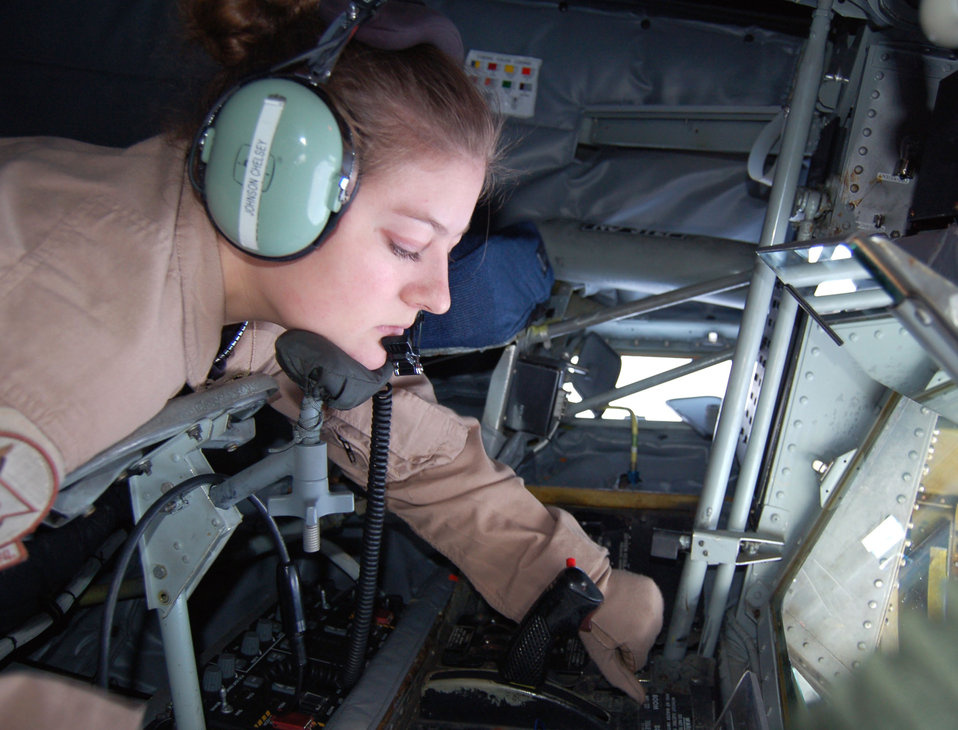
Reufelers keep mission going Christmas day over Afghanistan

Senior Airman Chelsey Johnson prepares the refueling boom in the back end of a KC-135 Stratotanker Christmas day for the arrival of a B-1B Lancer needing fuel. The bomber received 39,000 pounds of fuel to continue its mission over the Afghanistan area of responsibility. Airman Johnson is a 22nd Expeditionary Air Refueling Squadron boom operator deployed to Manas Air Base, Kyrgyzstan, from the 92 ARS at Fairchild Air Force Base, Wash.